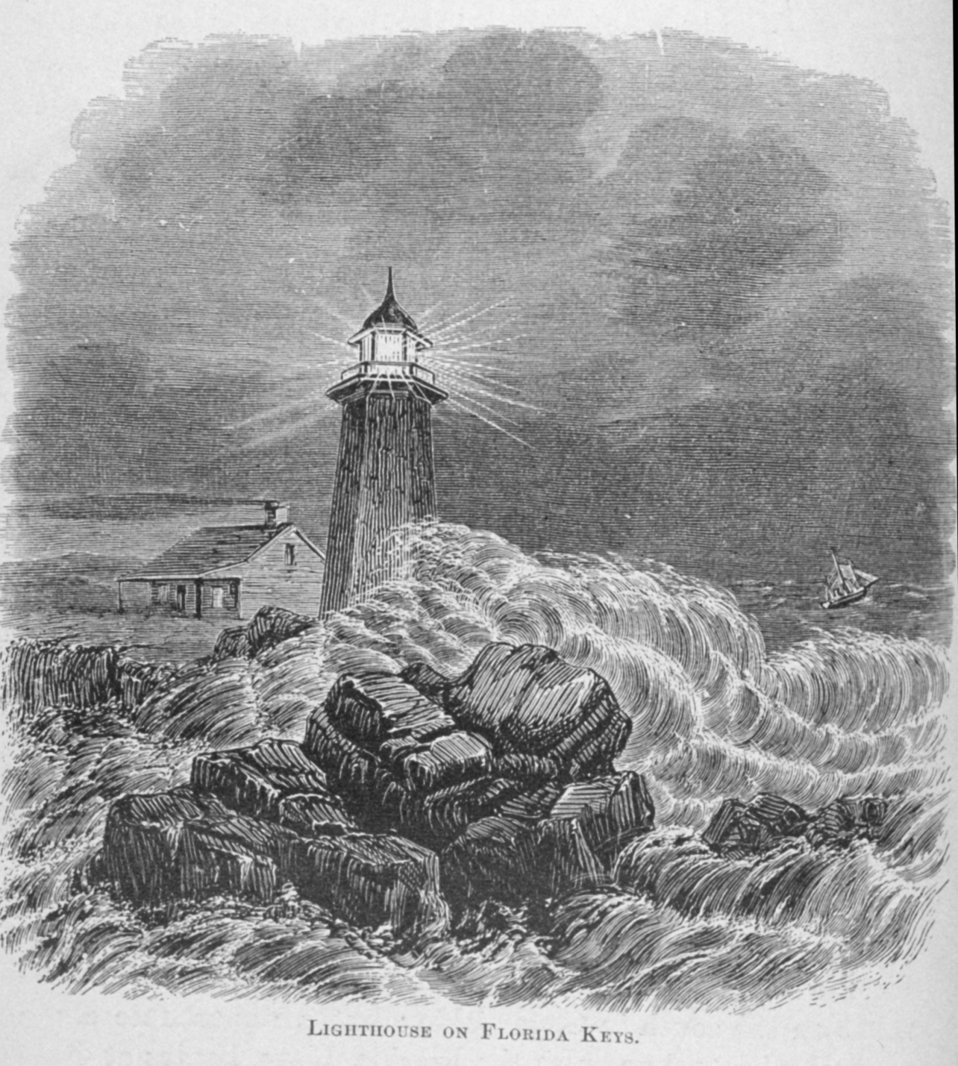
Lighthouse on Florida Keys - in 'Florida for Tourists, Invalids, and Settlers' by George M. Barbour, 1881. Library Call No. F316 .B23 1881. This particular lighthouse looks more like a misplaced New England Lighthouse than a lighthouse on the Florida Keys.